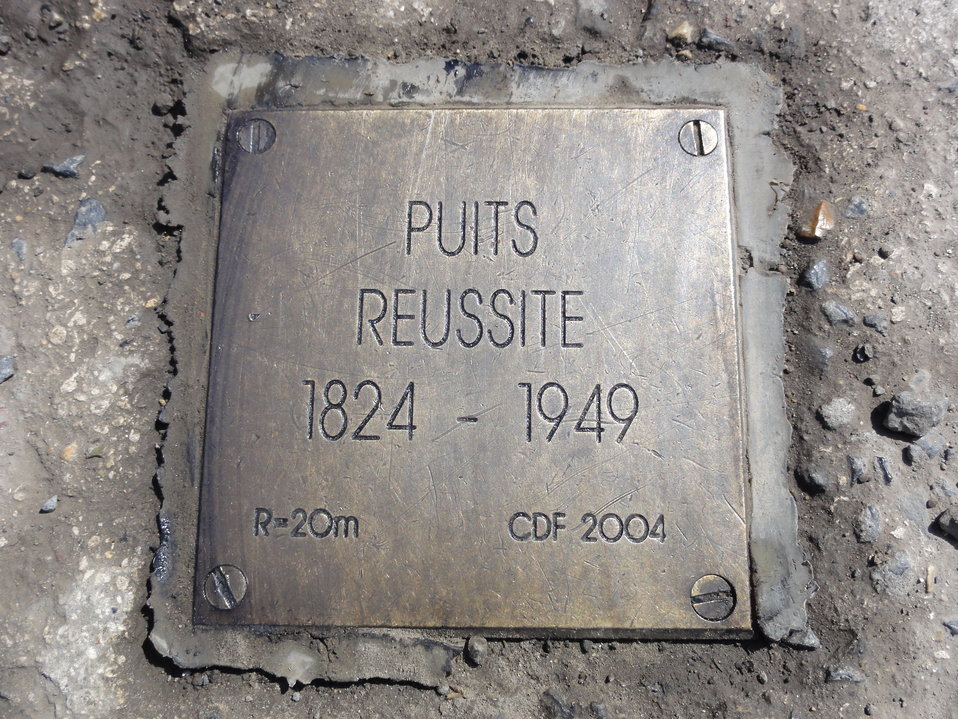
Fran√ßais†: La Fosse R√©ussite de la Compagnie des mines d'Anzin √©tait un charbonnage constitu√© d'un seul puits situ√© √† Valenciennes, Nord, Nord-Pas-de-Calais, France.